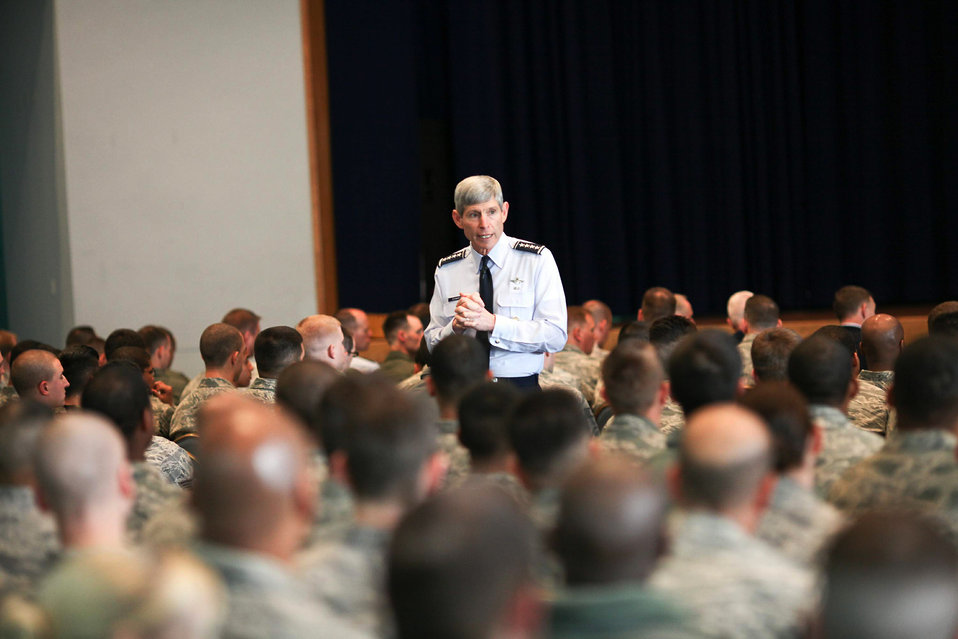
Gen. Schwartz visits Yakota AB

Air Force Chief of Staff Gen. Norton Schwartz talks with more than 600 Airmen during an Airman's call Feb. 8, 2011 at Yokota Air Base, Japan. The general spoke about his priorities for the service and fielded questions about issue affecting the Air Force in 2011.